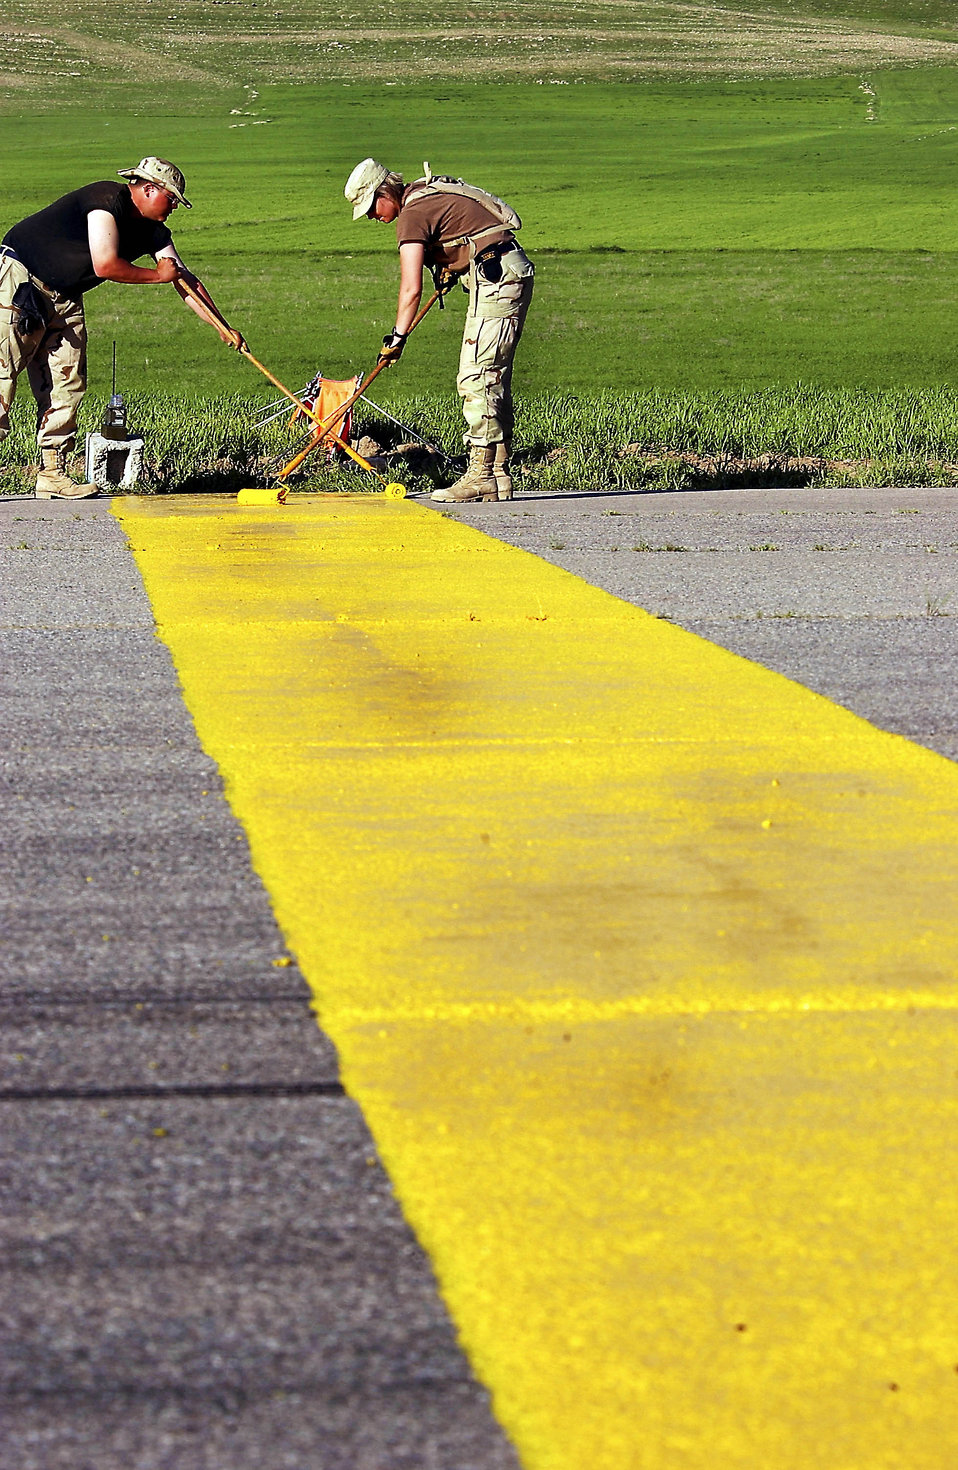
End of the line

OPERATION IRAQI FREEDOM -- Staff Sgt. Eric John Wood (left), a crew chief, and Tech. Sgt. Christina Bolle, an airfield management troop, paint the end-of-runway stripe at Bashur Airfield, Iraq. The heavy wear on the runway caused cracks, which forced the 86th Expeditionary Contingency Response Group, which operates the airfield, to shorten the runway by about 2,000 feet.